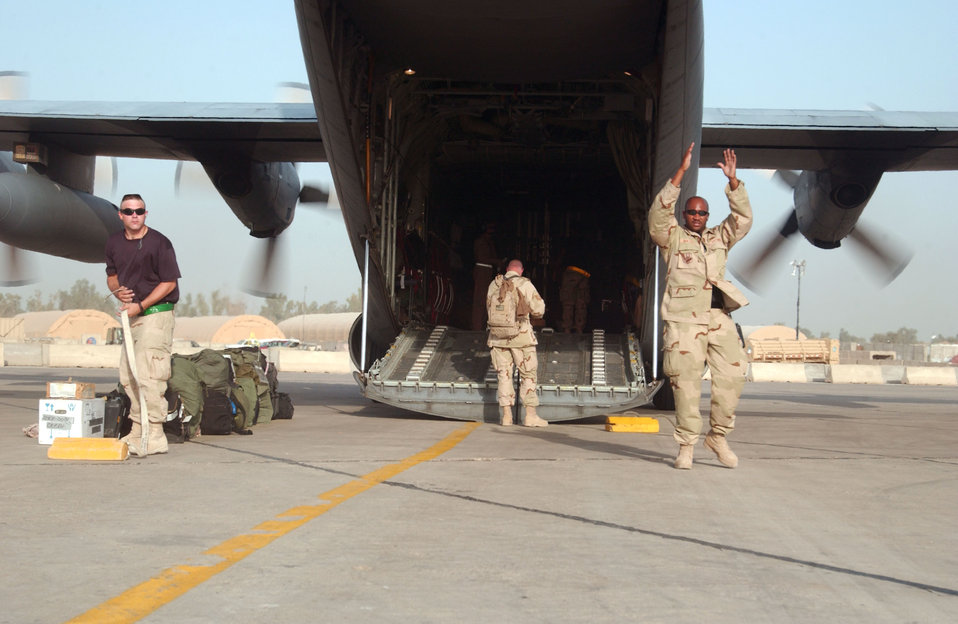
On the flightline at Sather Air Base

Airman guide cargo and passengers onto a C-130 Hercules at Sather Air Base, Iraq, on July 4.